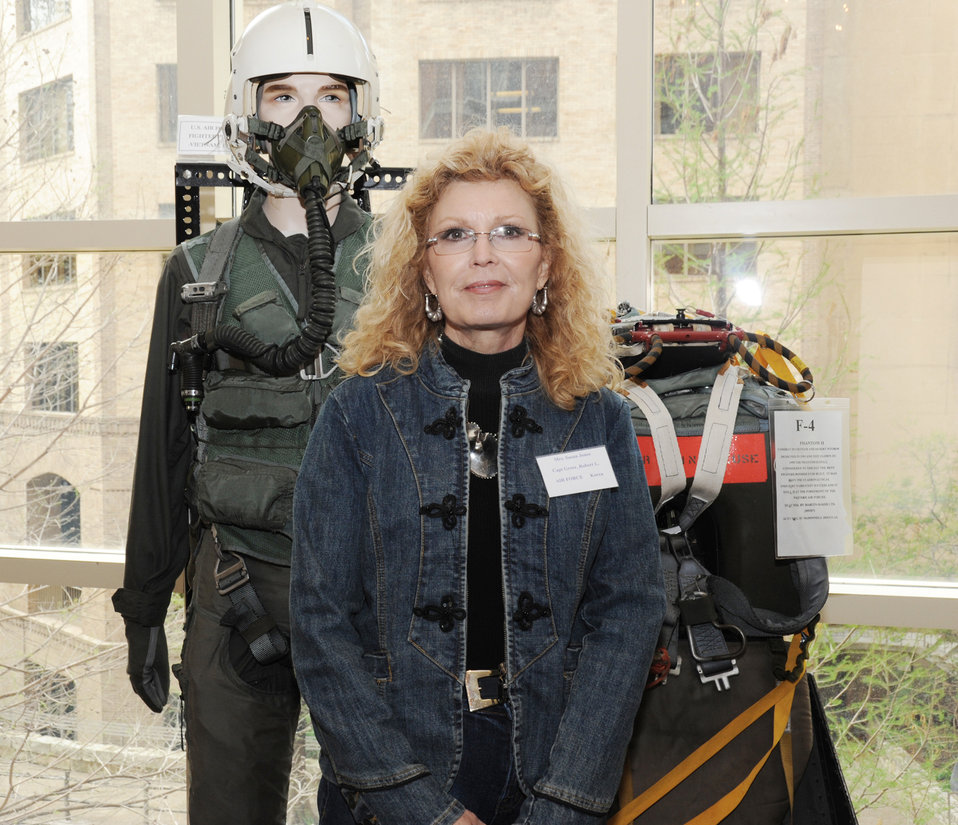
Defense POW/Missing Personnel Office staff puts pieces together for loved ones

Susan Jones, the daughter of Capt. Robert Greer, attends the family update meeting sponsored by the Defense Prisoner of War/Missing Personnel Office March 20, 2010, in San Antonio. Captain Greer was shot down on a mission during the Korean War when Mrs. Jones was 4 years old.